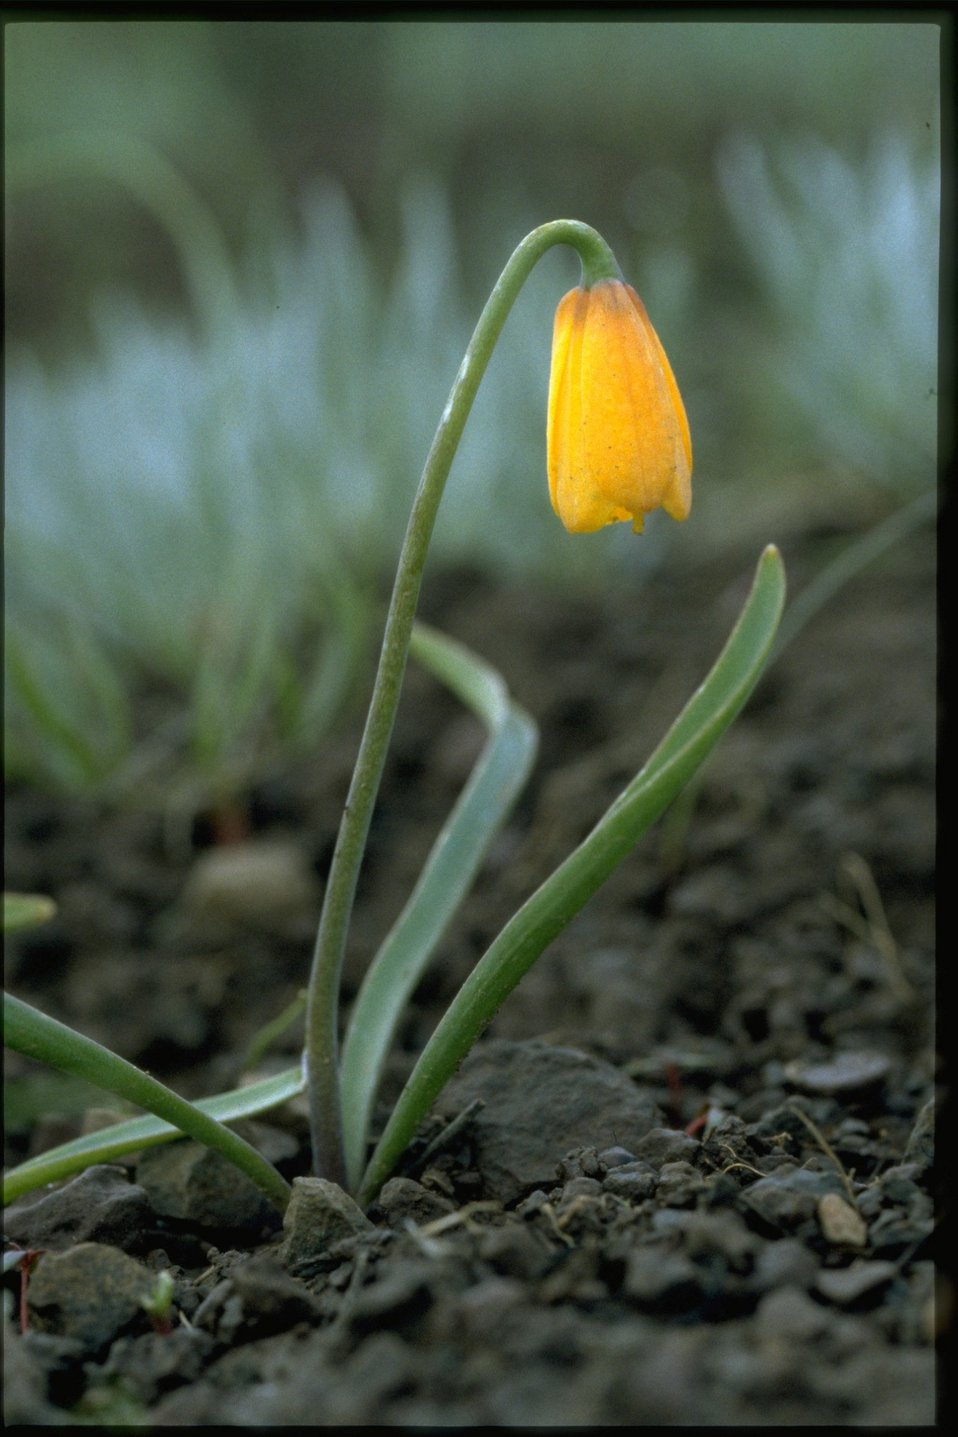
Closeup shot of Yellow Fritillary, Fritillaria Pudica, wildflower.